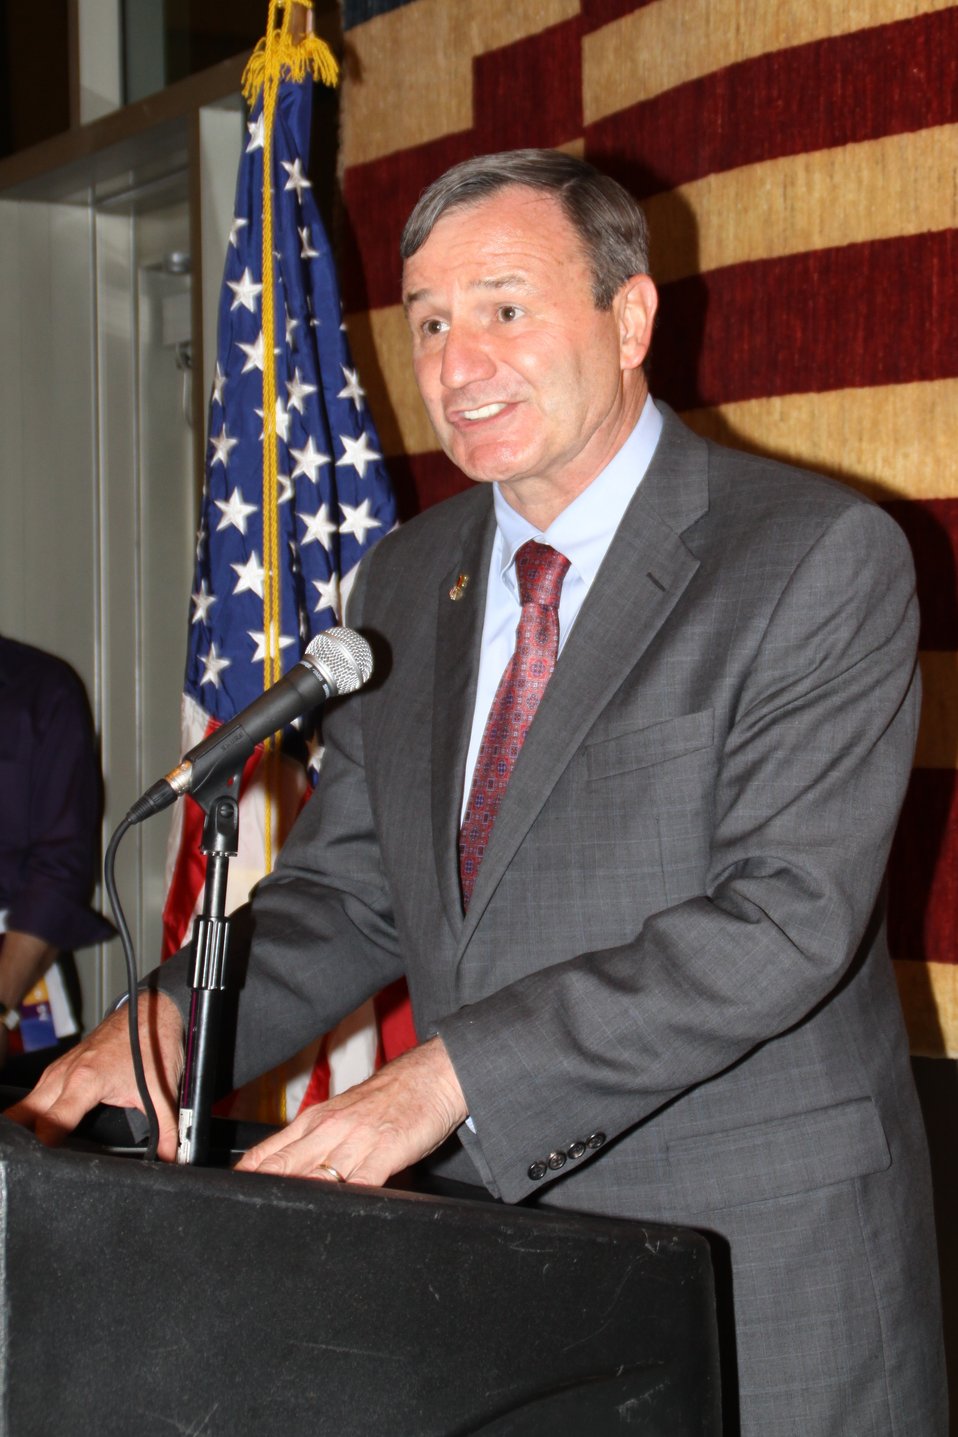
US Embassy Town Hall July 21, 2010